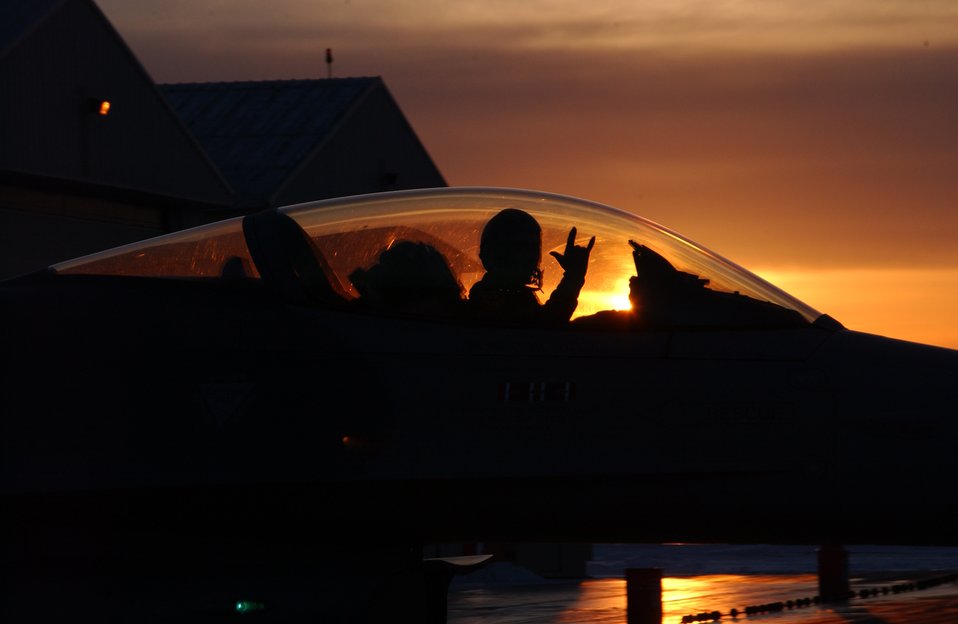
Sun sets on mission

DULUTH, Minn. -- An F-16 Fighting Falcon pilot gives the mission accomplished sign while taxiing to the Arm/DeArm Pad here March 3. The pilot and F-16 are both assigned to the Minnesota Air National Guard's 148th Fighter Wing.